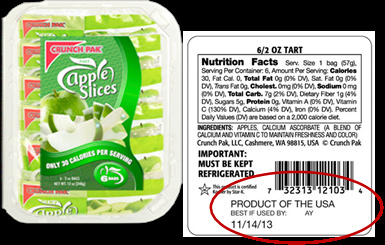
RECALLED – Apple slices

November 14, 2013 – Product Recall – Crunch Pak Issues Voluntary Recall of Limited Quantities of Crunch Pak Brand Apple Slices Because of Possible Health Risk.